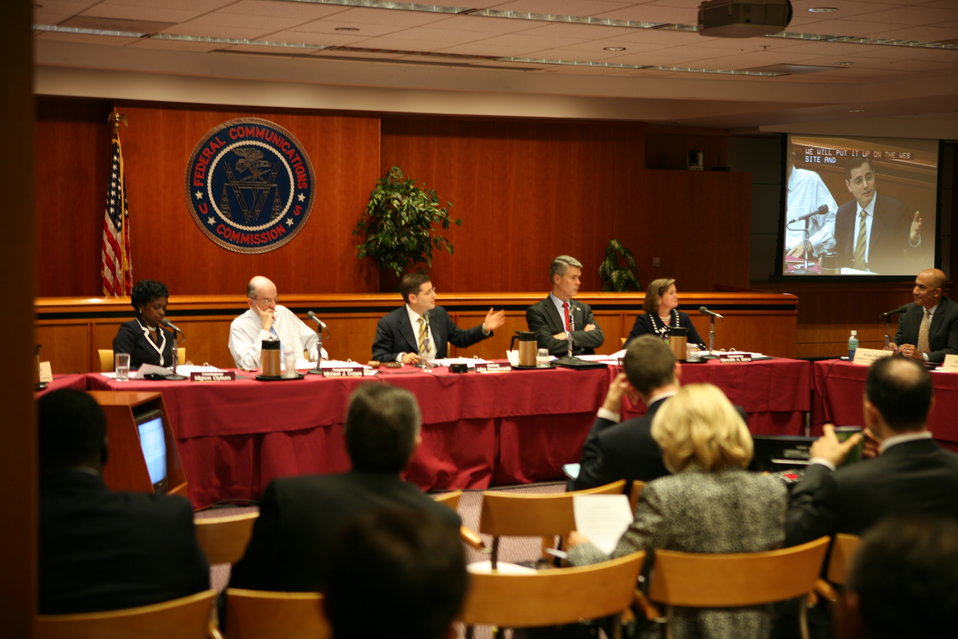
Broadband Midterm Review 9-29-09